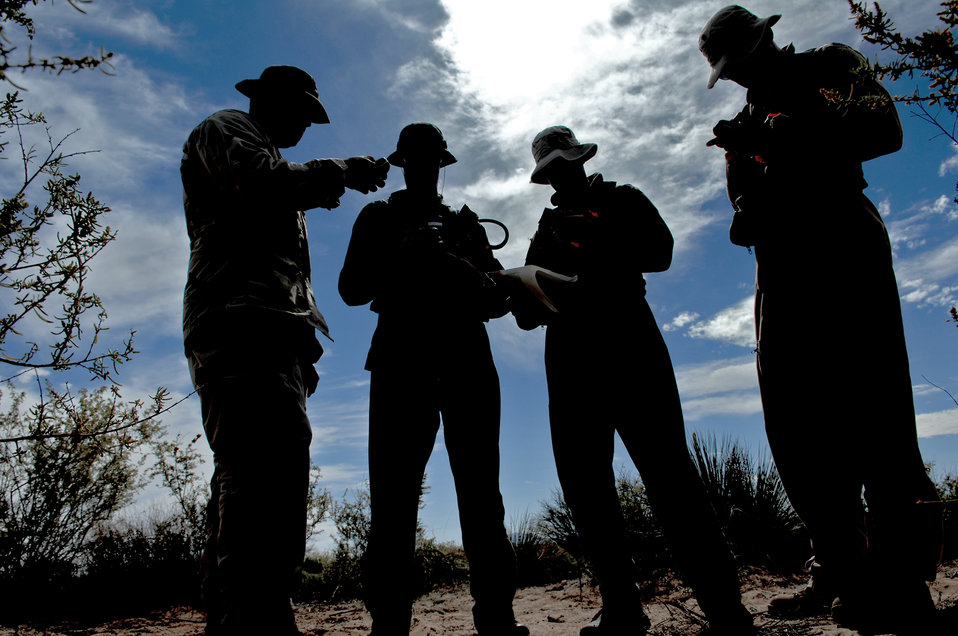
Set your coordinates now

A survival, evasion, resistance and escape specialist demonstrates how to use a Global Positioning System to Airmen with the 7th Fighter Squadron, May 5, 2010, during a SERE refresher training course at Holloman Air Force Base, N.M. Pilots and aircrew members are required to demonstrate competency in SERE techniques on a recurring basis.